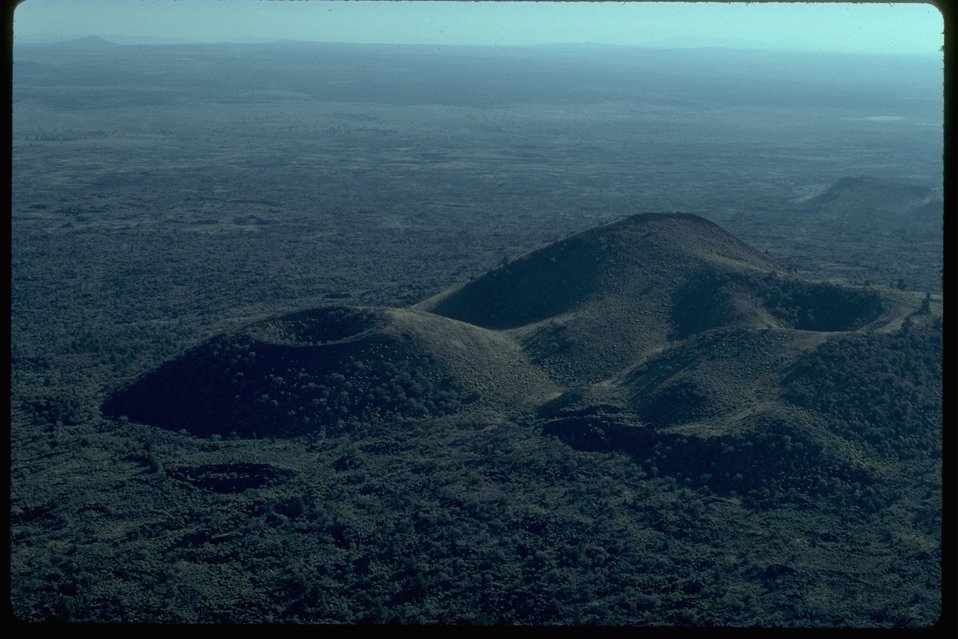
Overview of the Squaw Ridge Wilderness Study Area.